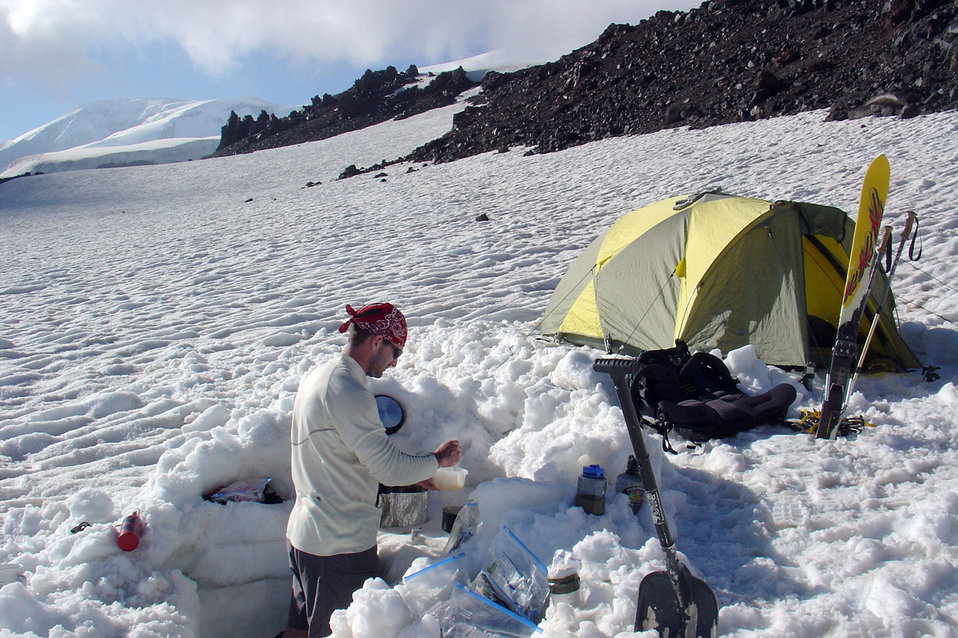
Only sky proves limit for 'mountain men'

MOUNT ELBRUS, Russia -- First Lt. Mark Uberuaga prepares dinner at his base camp at 12,000 feet on Mount Elbrus. He and Capt. Rob Marshall reached the summit in four days. Lieutenant Uberuaga is assigned to the 21st Special Operations Squadron at Royal Air Force Mildenhall, England.